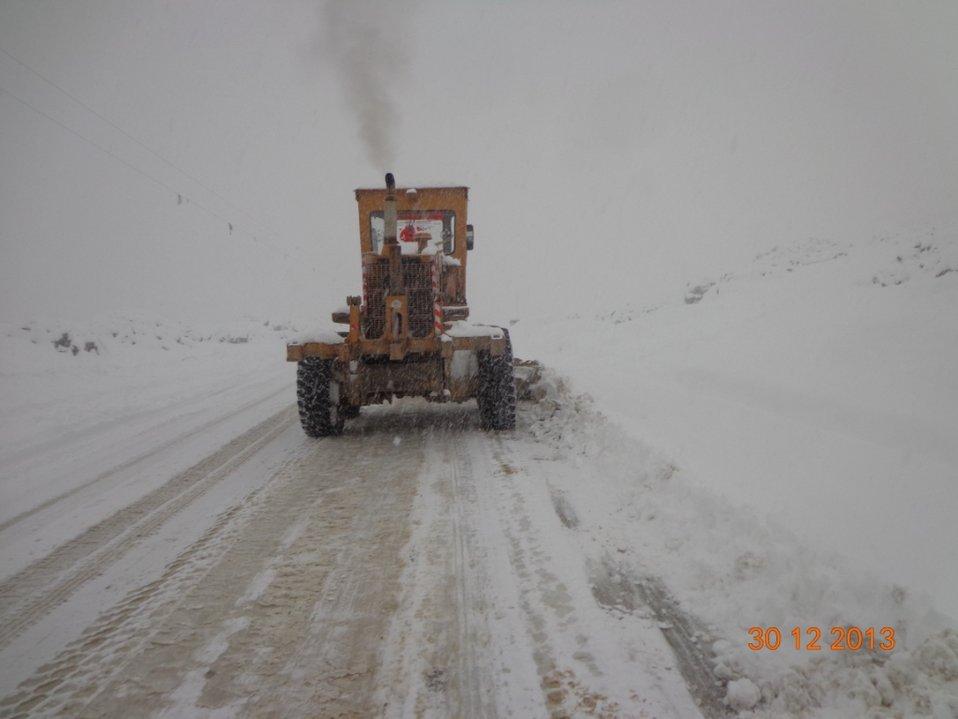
Snow removal work on the Gardez Khost road